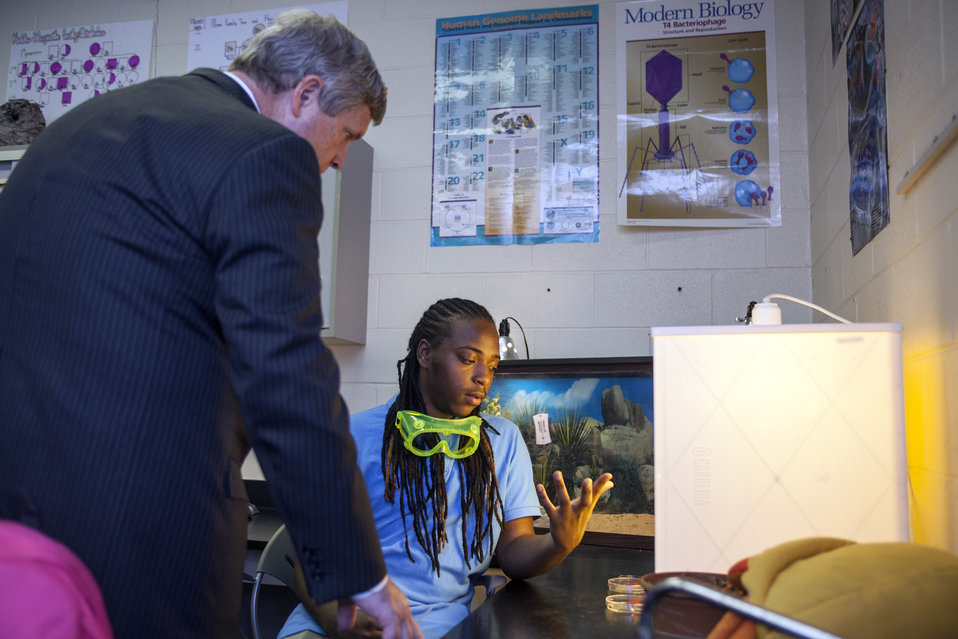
Agriculture Secretary Tom Vilsack tours the school facilities at Northeast Regional School of Biotechnology and Agriscience in Plymouth, NC on Friday, Aug. 15, 2013.